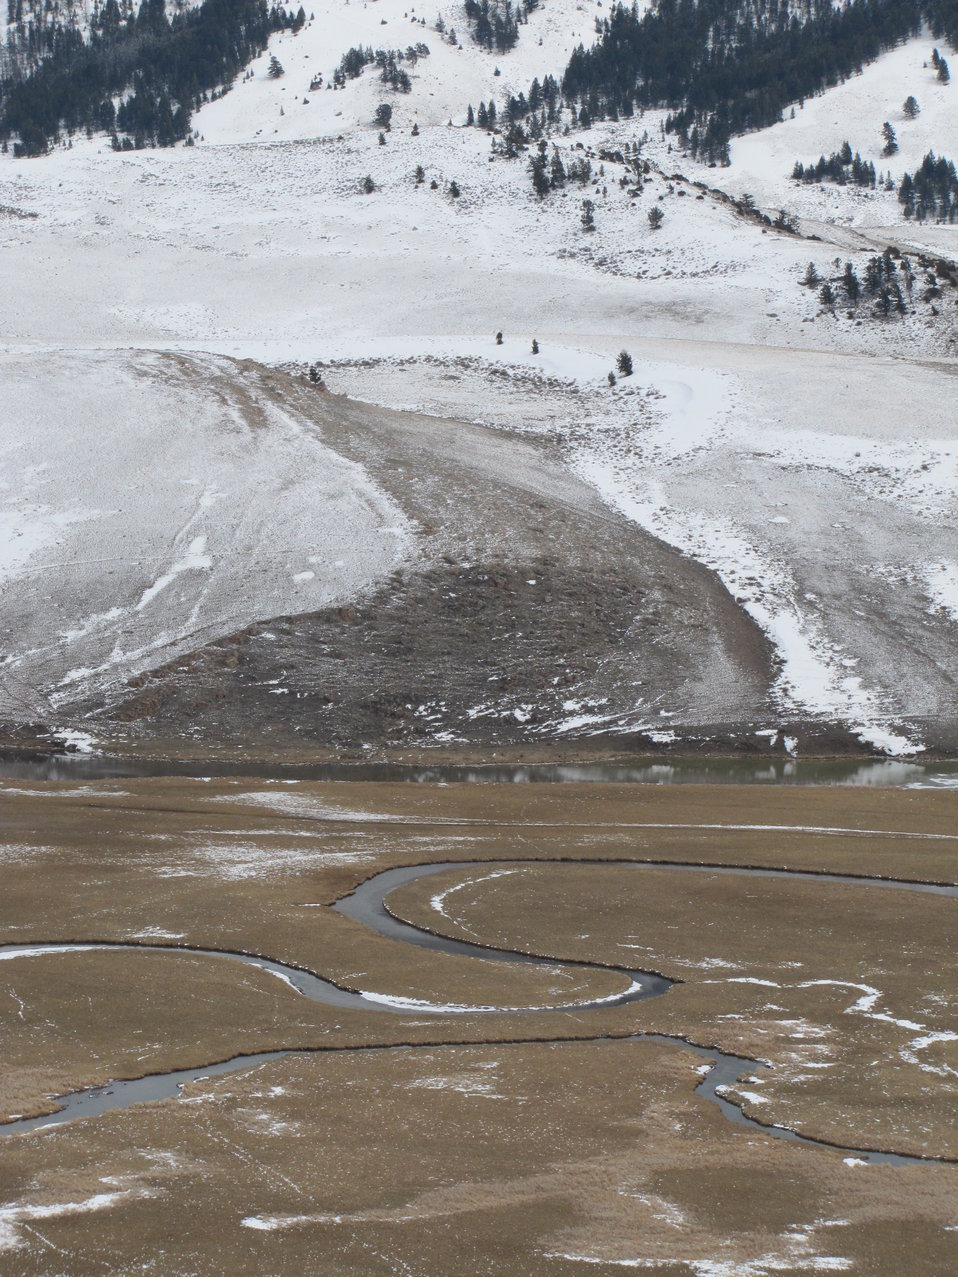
Meandering Flat Creek

Flat Creek winds it way in front of Miller Butte on the National Elk Refuge.